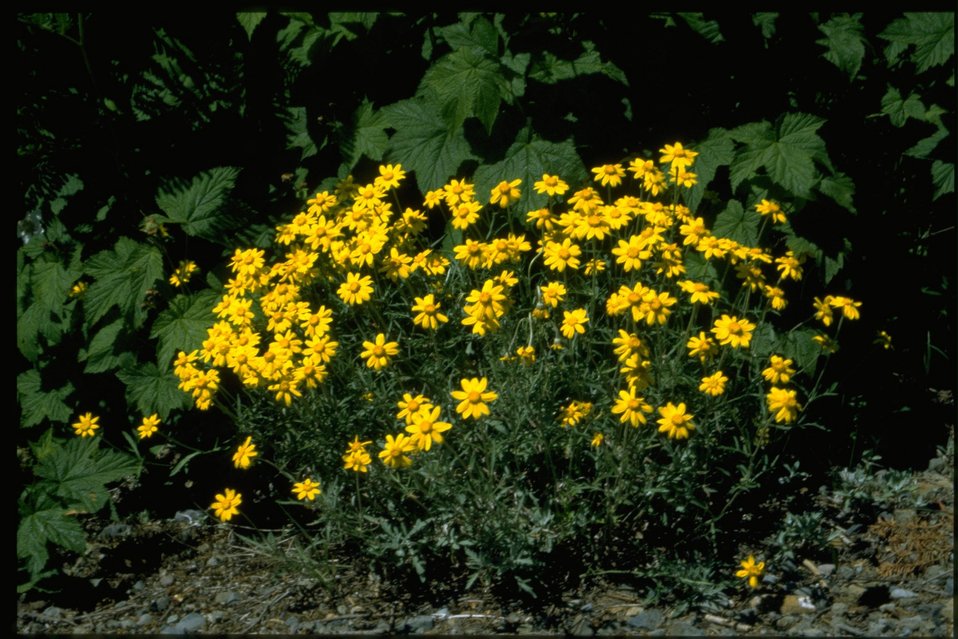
Medium shot of Asteraceae, Eriophyllum lanatum.